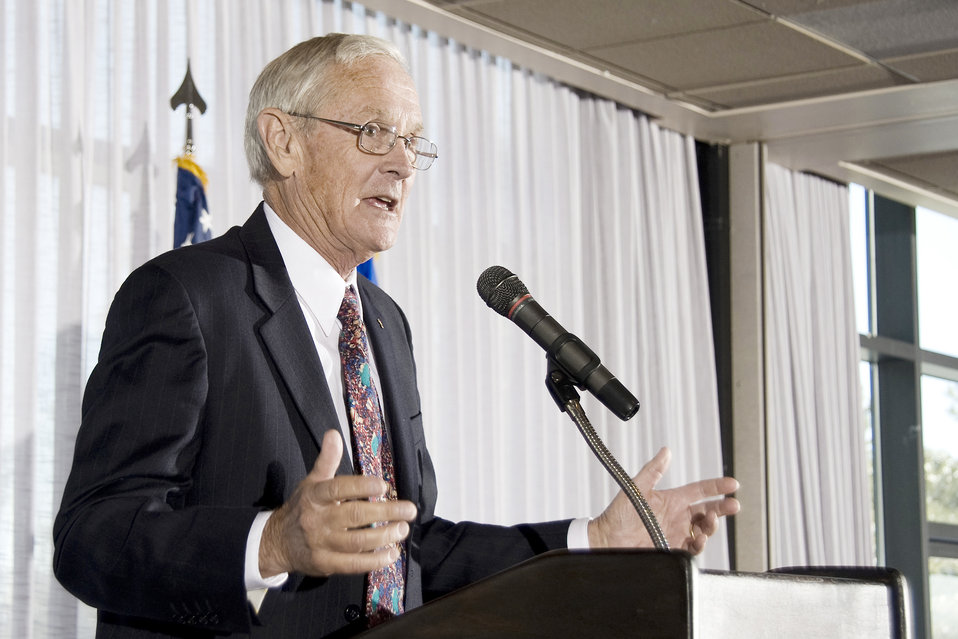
Prayer luncheon speaker recalls wonder of space

Retired Brig. Gen. Charles Duke Jr. speaks at the U.S. Air Force Academy's National Prayer Luncheon Feb. 9, 2009, at the Academy's Falcon Club in Colorado. General Duke, a former astronaut who walked on the moon's surface, spoke about